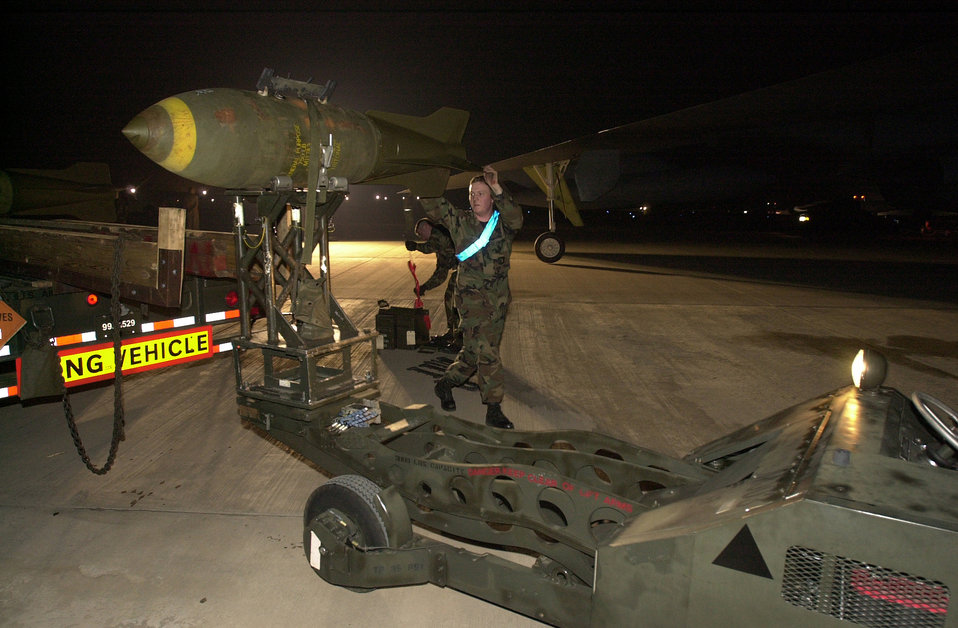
Bomb load

OPERATION IRAQI FREEDOM -- A Munitions maintenance crew member of the 457th Air Expeditionary Group prepares a bomb load for a B-52H Stratofortress.